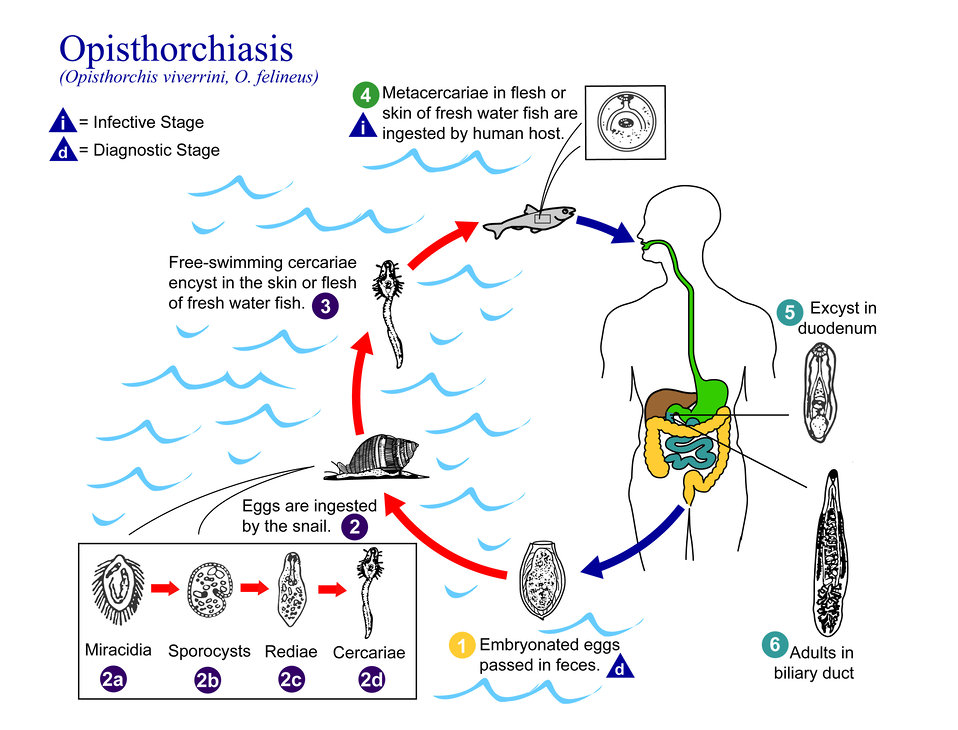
This illustration shows the life cycle of Opisthorchis felineus and O. viverrini, responsible for Opisthorchiasis.